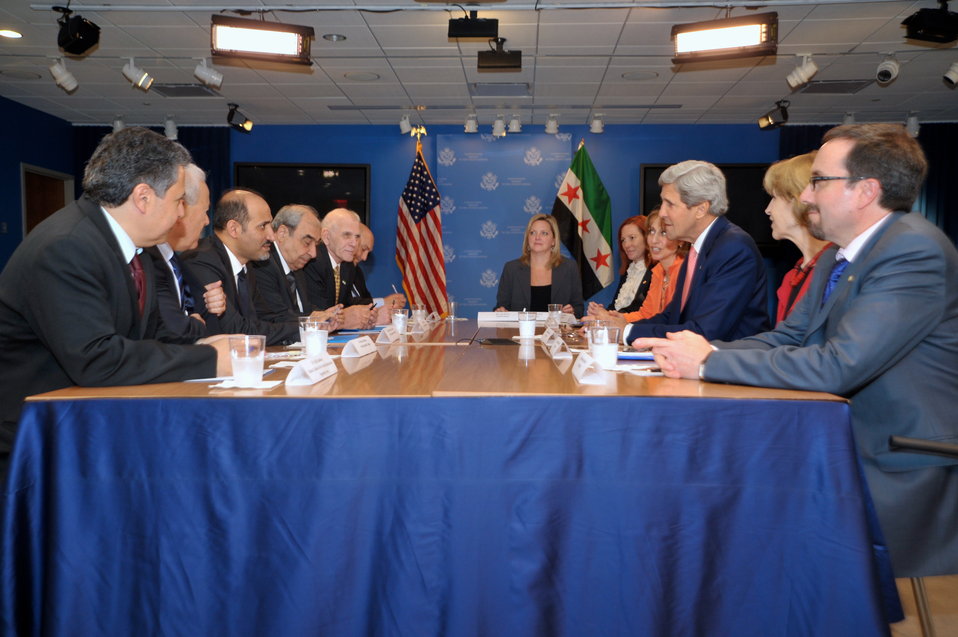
Secretary Kerry Meets With Members of the Syrian Opposition Council

U.S. Secretary of State John Kerry meets with members of the Syrian Opposition Council after visiting the United Nations in New York City on July 25, 2013.